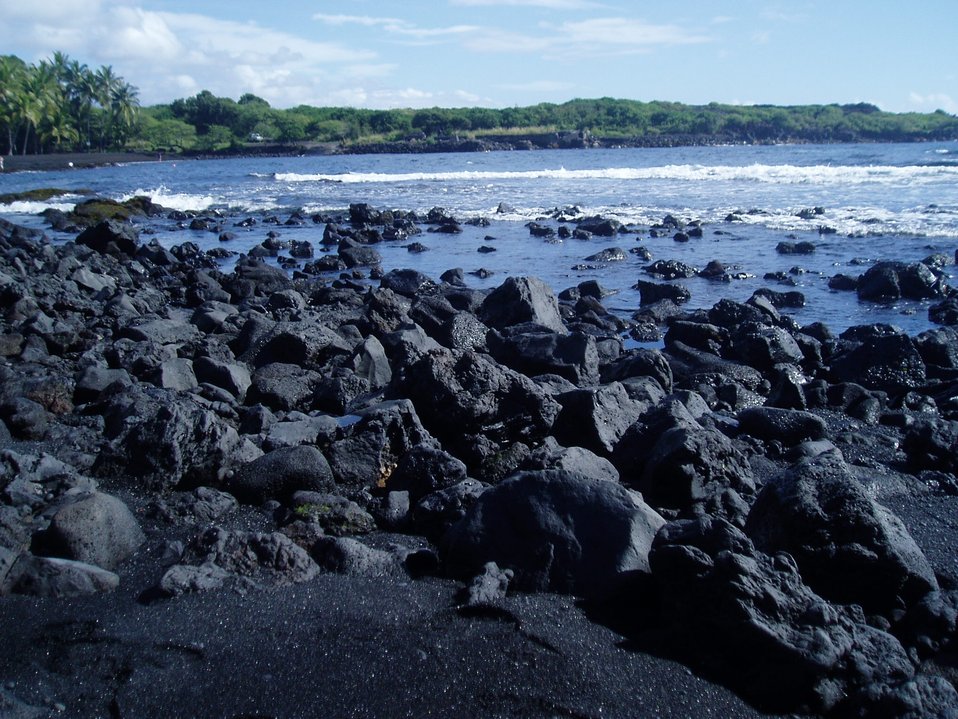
A recent lava flow forms the beach on the southeast side of the big island.